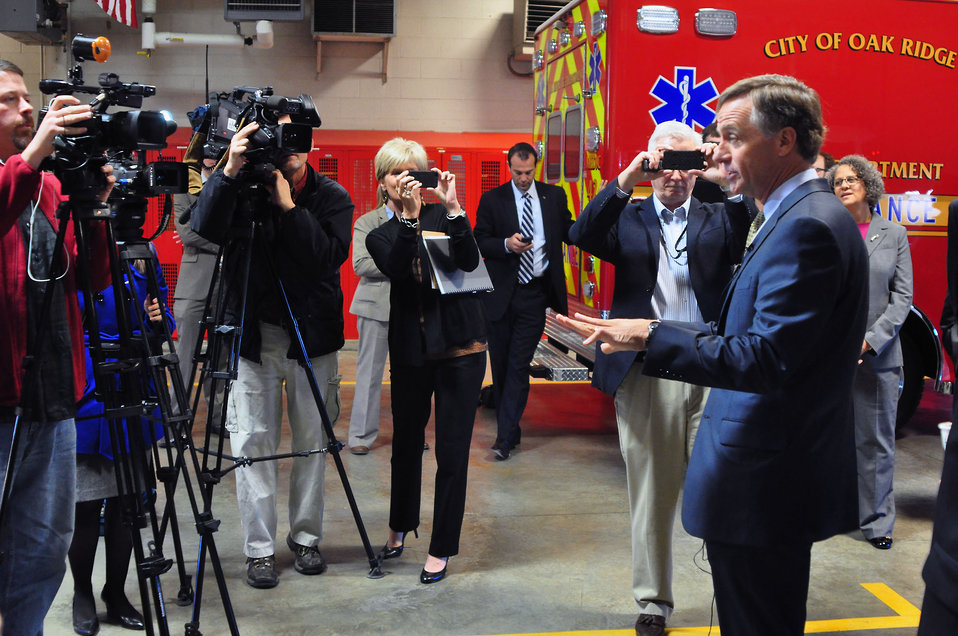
Gov. Bill Haslam Visit to ETTP 2014 Oak Ridge

14-037 DOE photo Lynn Freeny 3-21-2014 Oak Ridge Tennessee